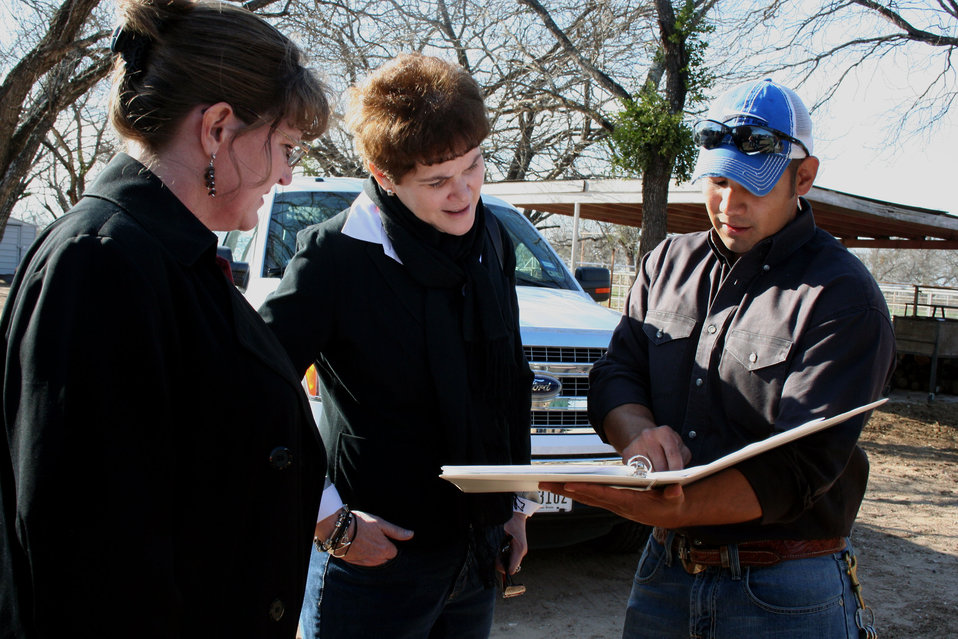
Miguel Ruiz shows Agriculture Deputy Secretary Krysta Harden and U.S. Department of Agriculture (USDA) Farm Service Agency ( FSA) Loan Manager Raecene Randall his ranch notebook showcasing his cattle and the work he has done on the ranch in Lytle, TX, with the help of a USDA FSA operating loan on Friday, Feb. 28, 2014.